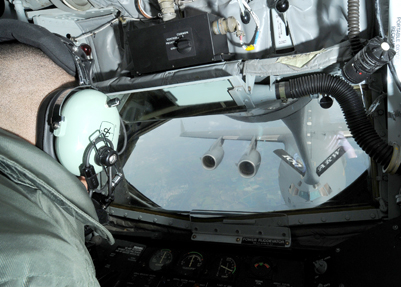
Partnership makes for expanded air refueling capabilities

Airman 1st Class Ronnie Echavarria flies the boom of a KC-135 Stratotanker toward a C-17 Globemaster III Nov. 12, 2010, over Germany. The C-17 is from the Heavy Airlift Wing at Papa Air Base, Hungary. Airman Echavarria is a 351st Air Refueling Squadron KC-135 boom operator.